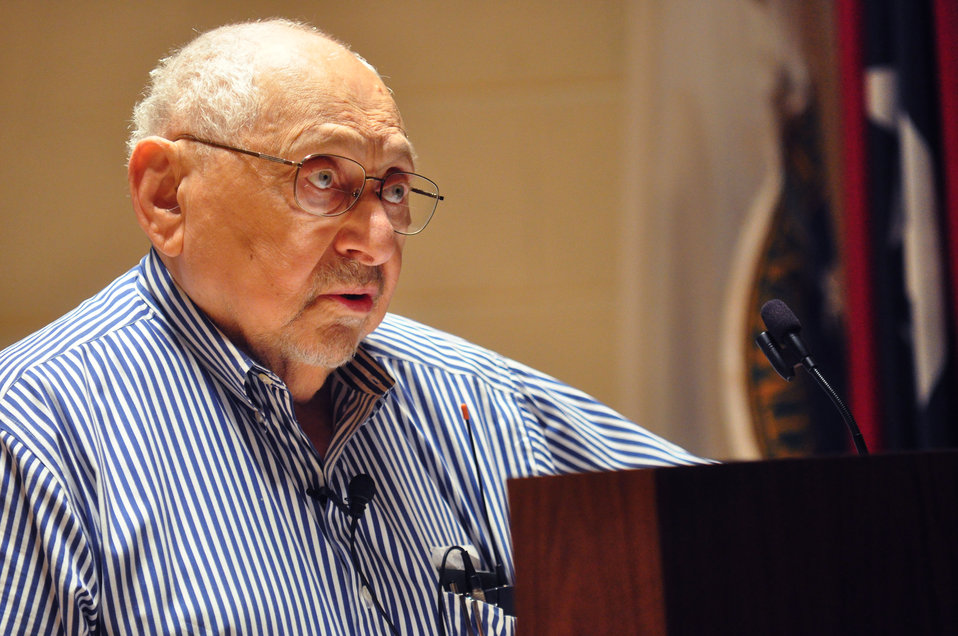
Holocaust Remembrance Program FEW Arthur Pais at AMSE in Oak Ridge

13-096 DOE photo Lynn Freeny 8-8-2013 Oak Ridge Tennessee